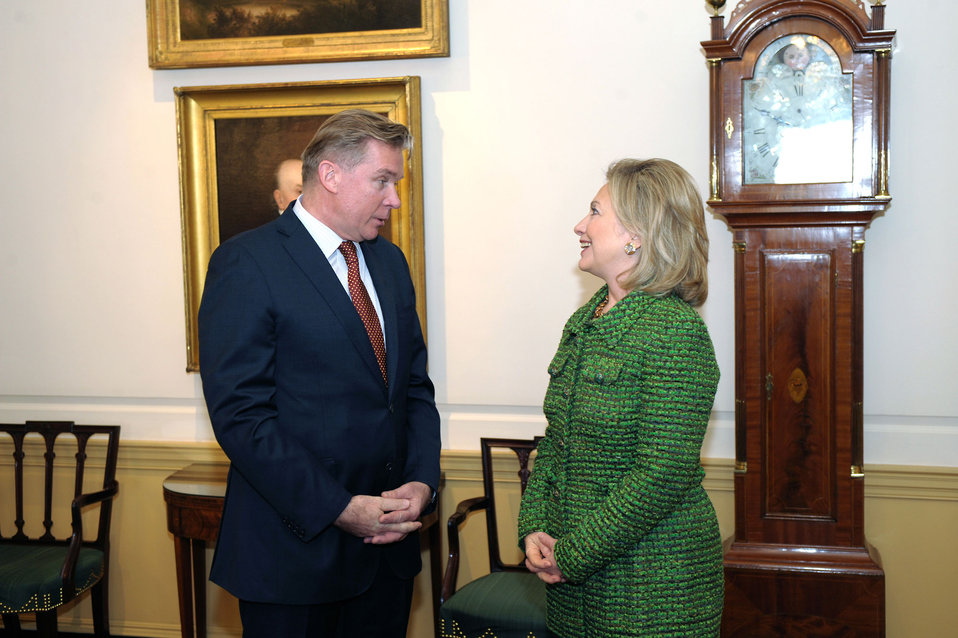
Secretary Clinton Speaks With Lithuanian Foreign Minister Azubalis

U.S. Secretary of State Hillary Rodham Clinton speaks with Lithuanian Foreign Minister and Chairman of the OSCE Audronius Azubalis after their bilateral meeting at the U.S. Department of State in Washington, D.C., on February 16, 2011.